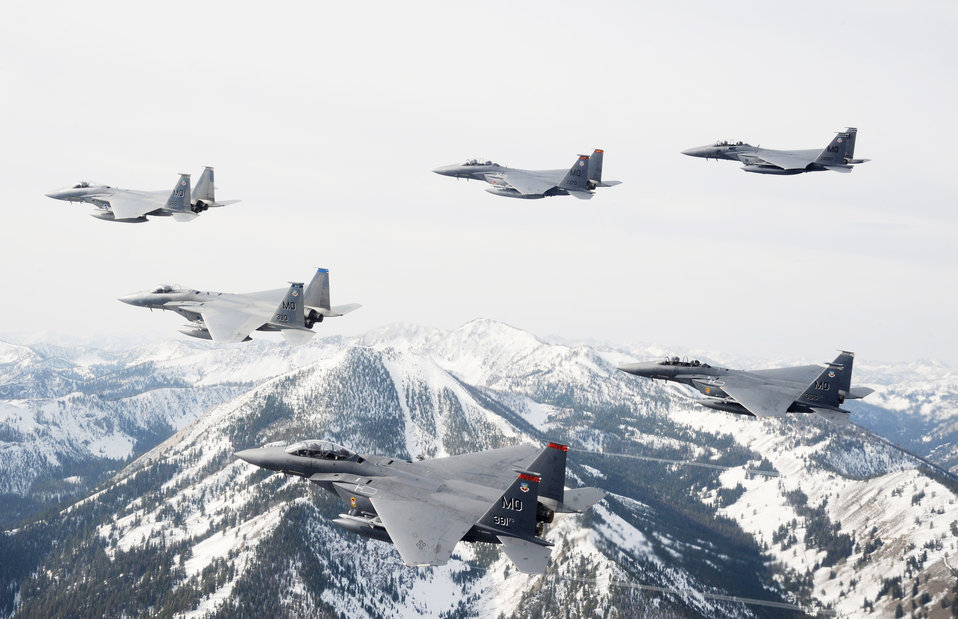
Majestic view

A six-ship formation of F-15C Eagle and F-15E Strike Eagles from the 366th Fighter Wing at Mountain Home Air Force Base, Idaho, fly over the nearby Sawtooth Mountains Oct. 13, 2009.